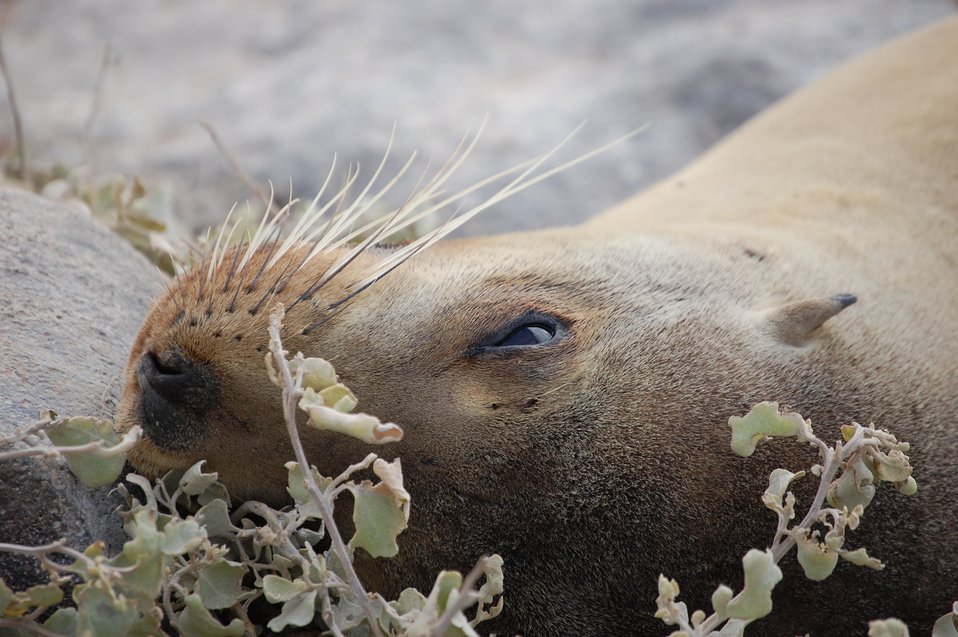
Sea lion.